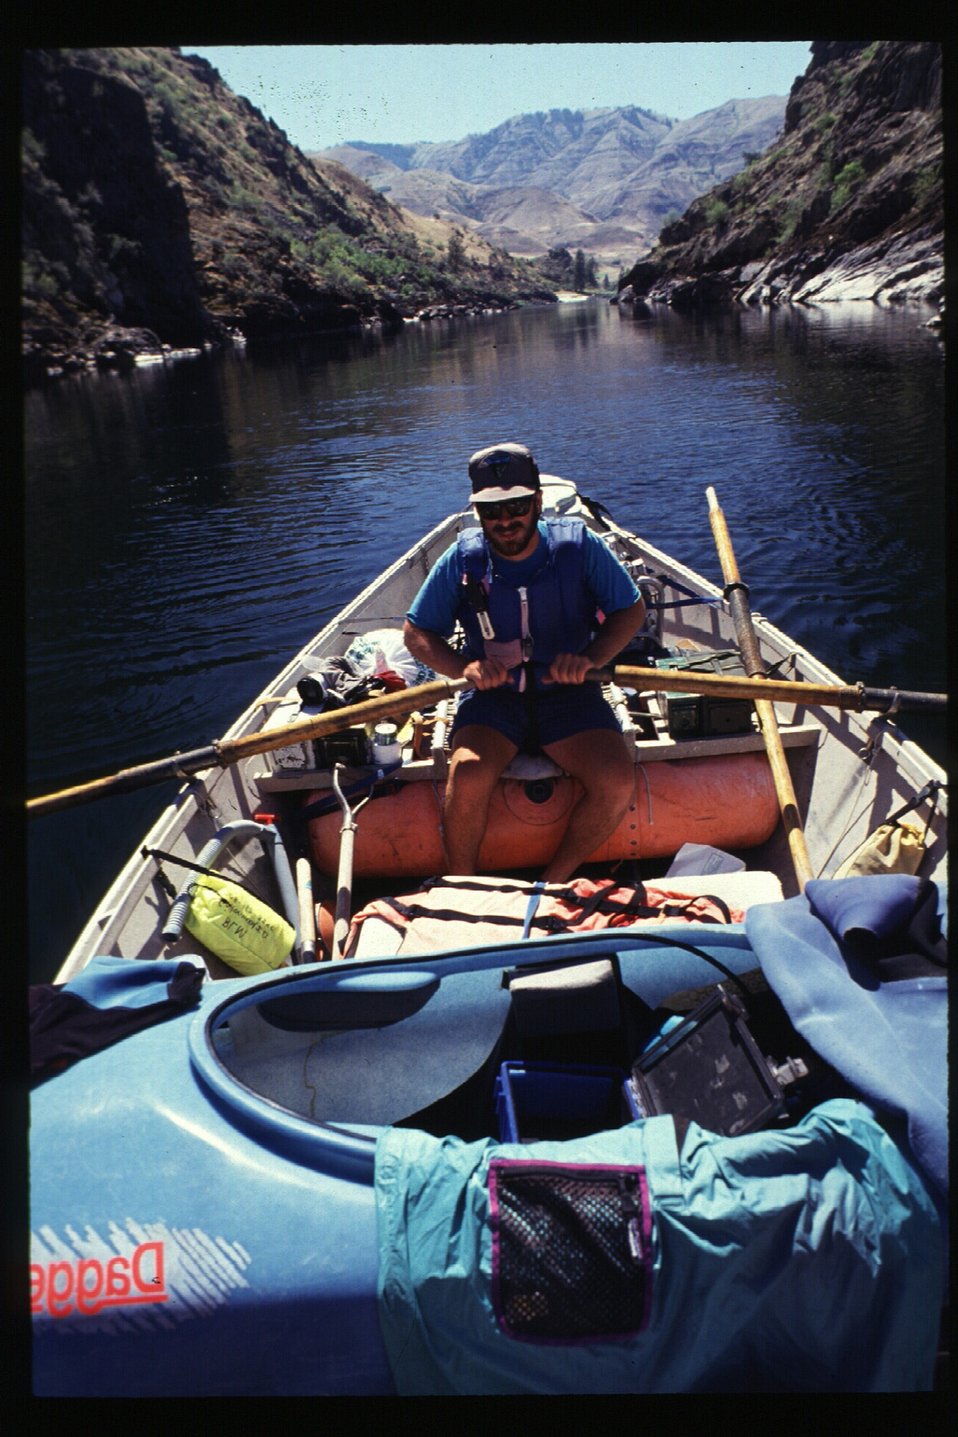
Dory and a kayak Lower Salmon River Cottonwood Field Office UCSC Upper Columbia Salmon Clearwater District